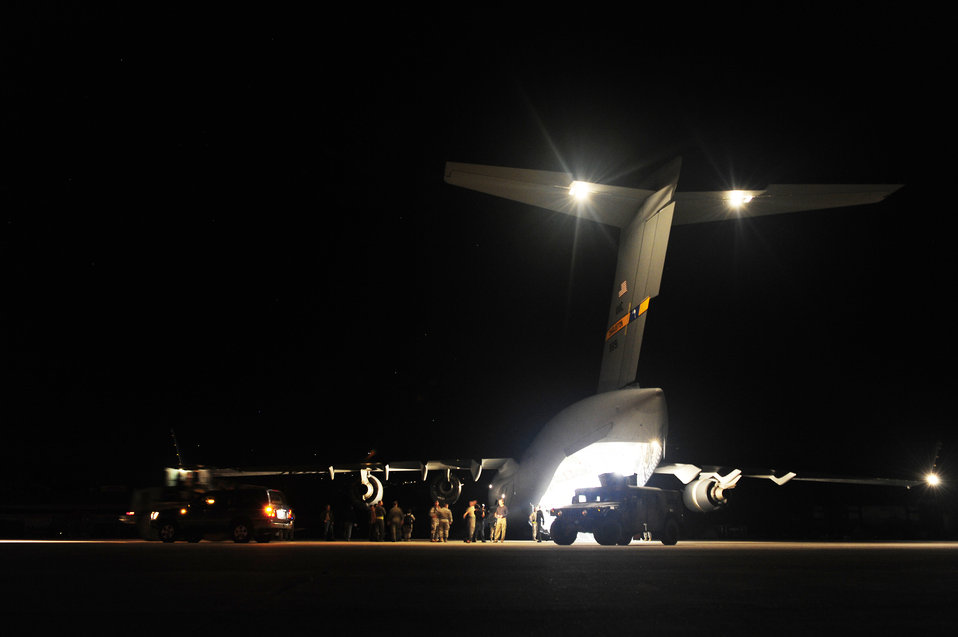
Haiti Relief Operations

Airmen from the 621st Contingency Response Wing at Joint Base McGuire-Dix-Lakehurst, N.J., off load cargo from a C-17 Globemaster III, Jan. 15, 2010, at the airport in Port-au-Prince to support relief efforts for Haiti.